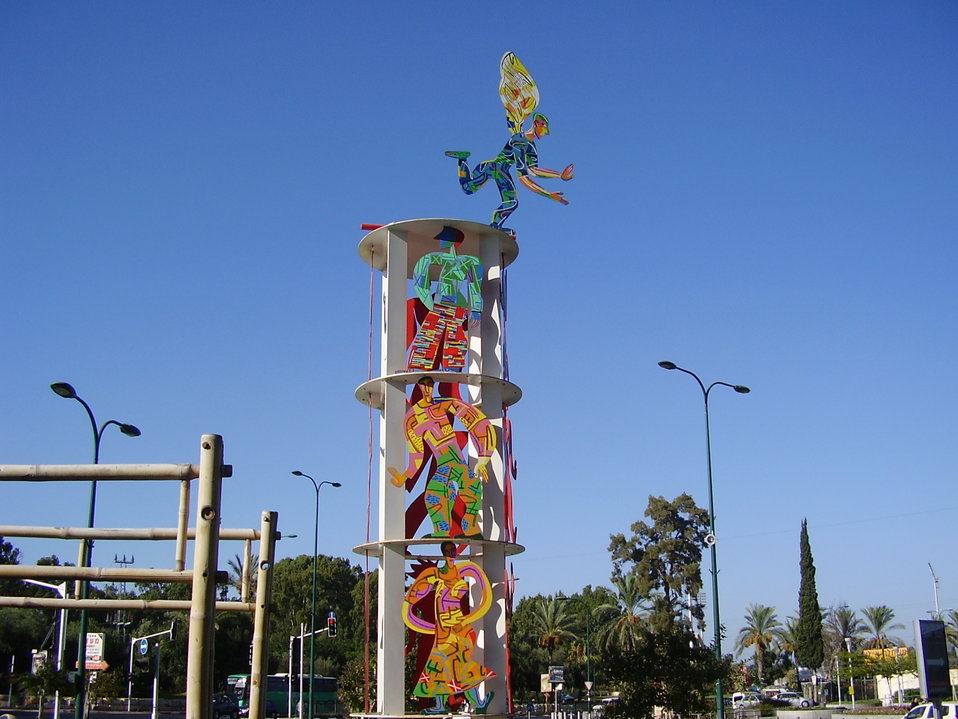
'Sky is the limit' by David Gerstein(2008) השמיים הם הגבול' מאת דוד גרשטיין(2008) ברמת גן'